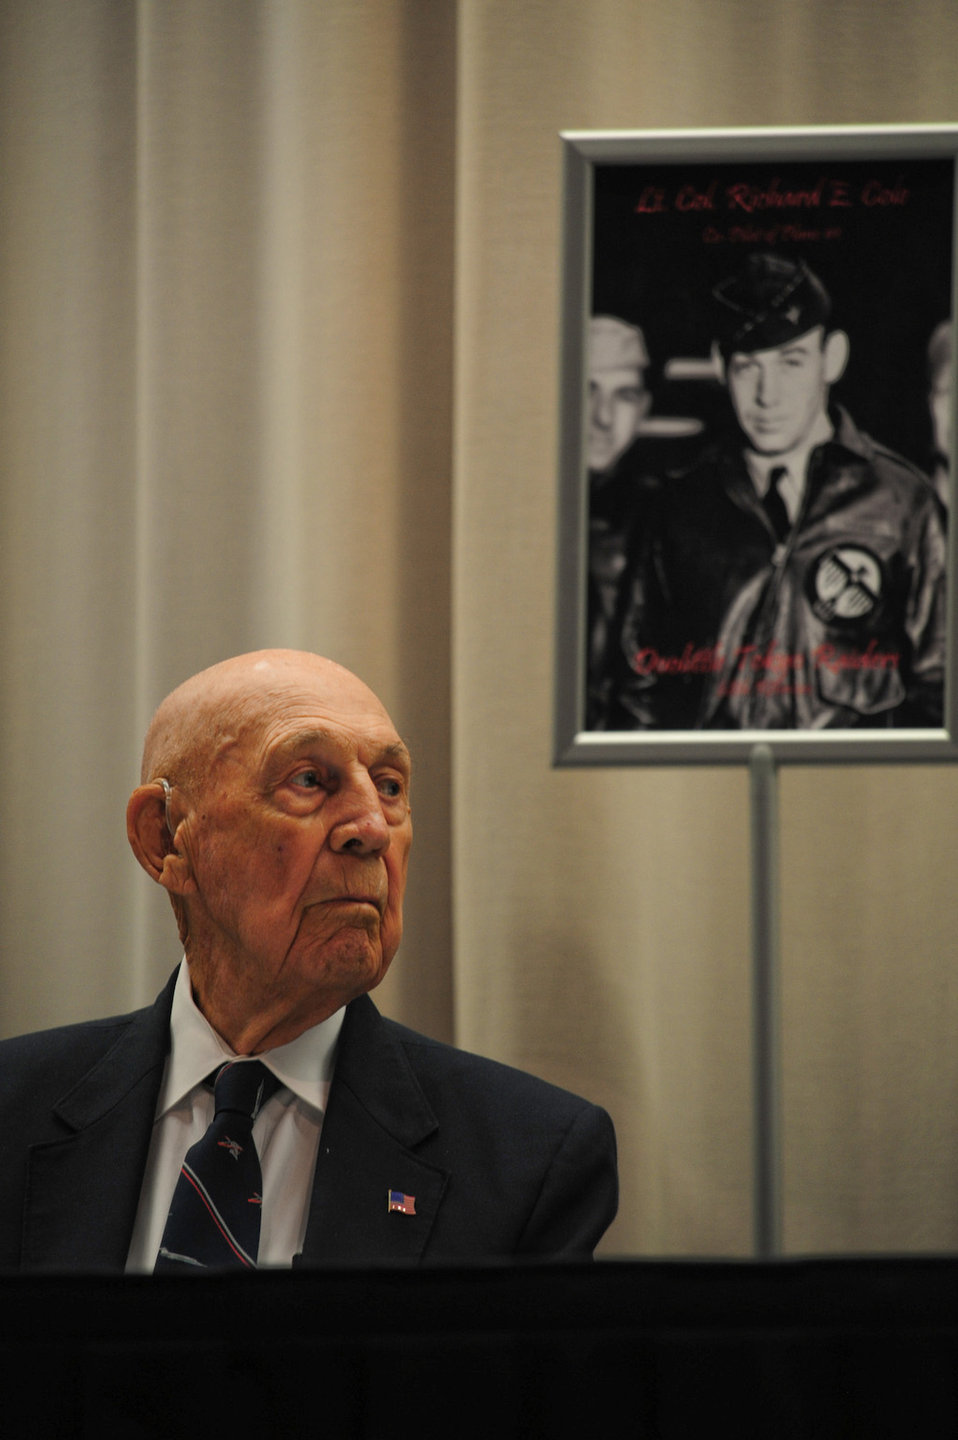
68th Doolittle Raiders Reunion

U.S. Air Force Lt. Col (ret.) Richard E. Cole, co-pilot of the first B-25 Mitchell Bomber that took part in the Doolittle Tokyo Raid, attends a press event at the National Museum of the U.S. Air Force at Wright Patterson Air Force Base, Ohio, April 16, 2010. The Doolittle Raiders' 68th reunion commemorates the anniversary of the Doolittle Tokyo Raid on April 18th, 1942, when U.S. Army Air Forces Lt. Col. Jimmy Doolittle's squad of 16 B-25s bombed targets in response to the Japanese attack on Pearl Harbor.